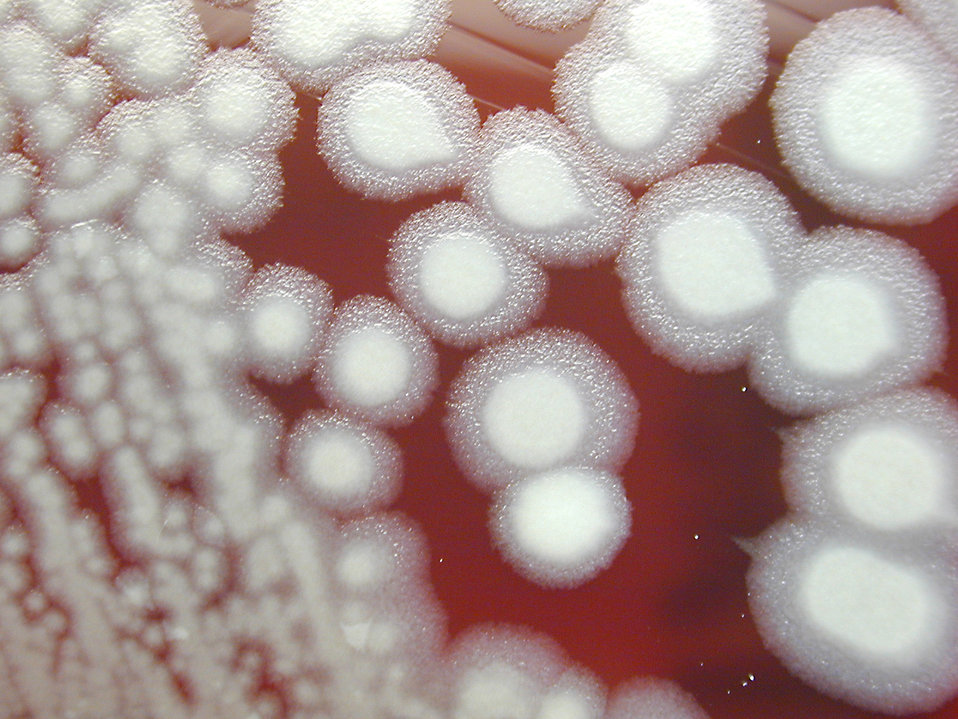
Bacillus anthracis Avirulent Pasteur Strain, Non-hemolytic on sheep blood agar